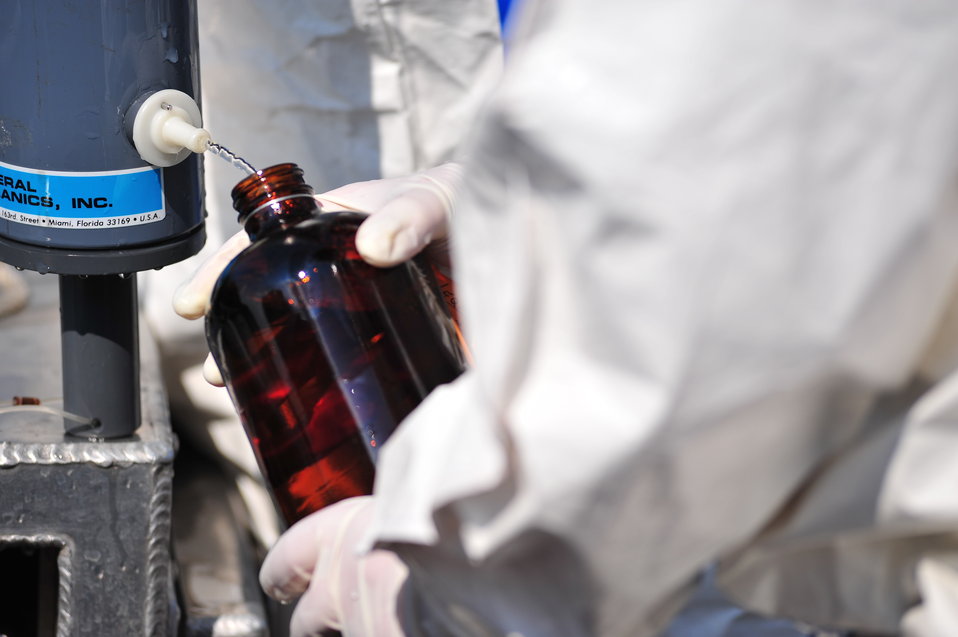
EPA's response to the Enbridge oil spill

August 2, 2010 - Water and sediment sampling operations during Enbridge Spill Response on Morrow Lake near Battle Creek, Michigan from Mudpuppy II, EPA's news research vessel.